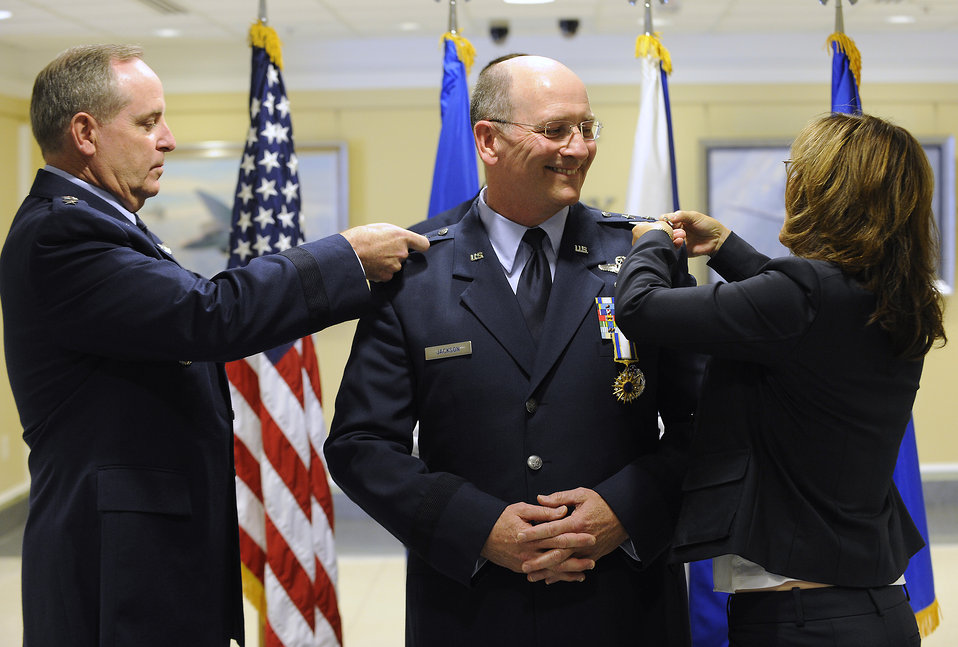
AFRC commander promoted

Air Force Chief of Staff Gen. Mark A. Welsh III and Barbara Jackson, wife of newly-promoted Lt. Gen. James Jackson, pin on Jackson's new rank during a Pentagon ceremony on Aug. 16, 2012. Jackson is the commander of Air Force Reserve Command and chief of the Air Force Reserve.